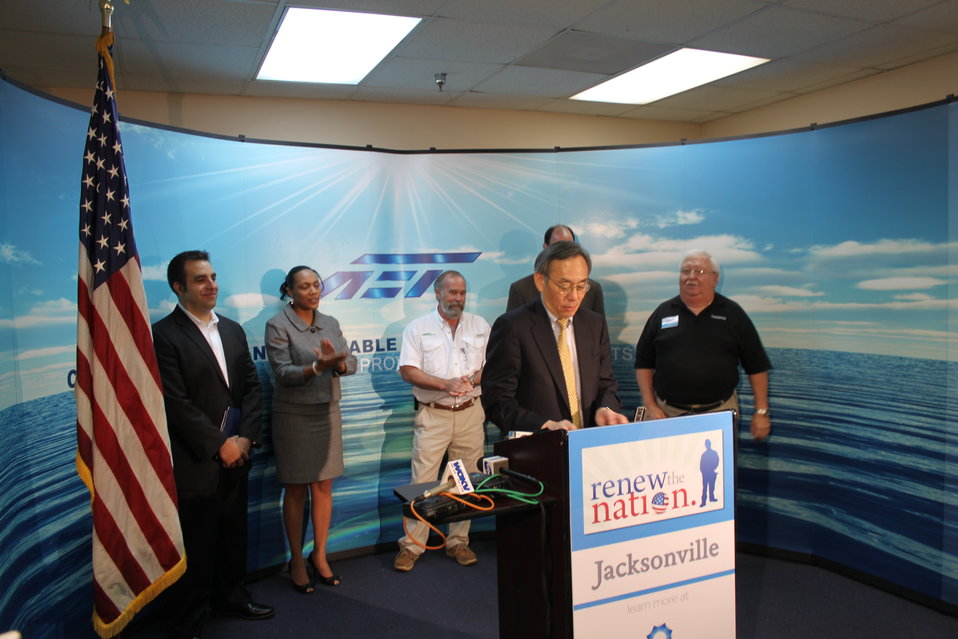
Norm 070